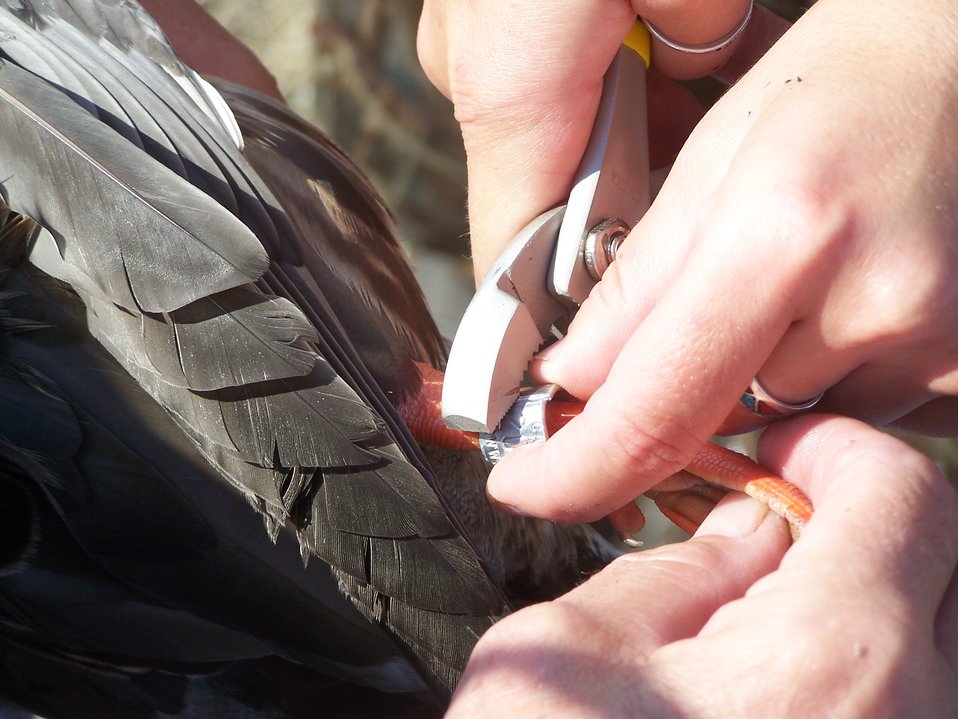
Applying Duck Band

Duck band is placed on a Mallard at Bowdoin NWR.